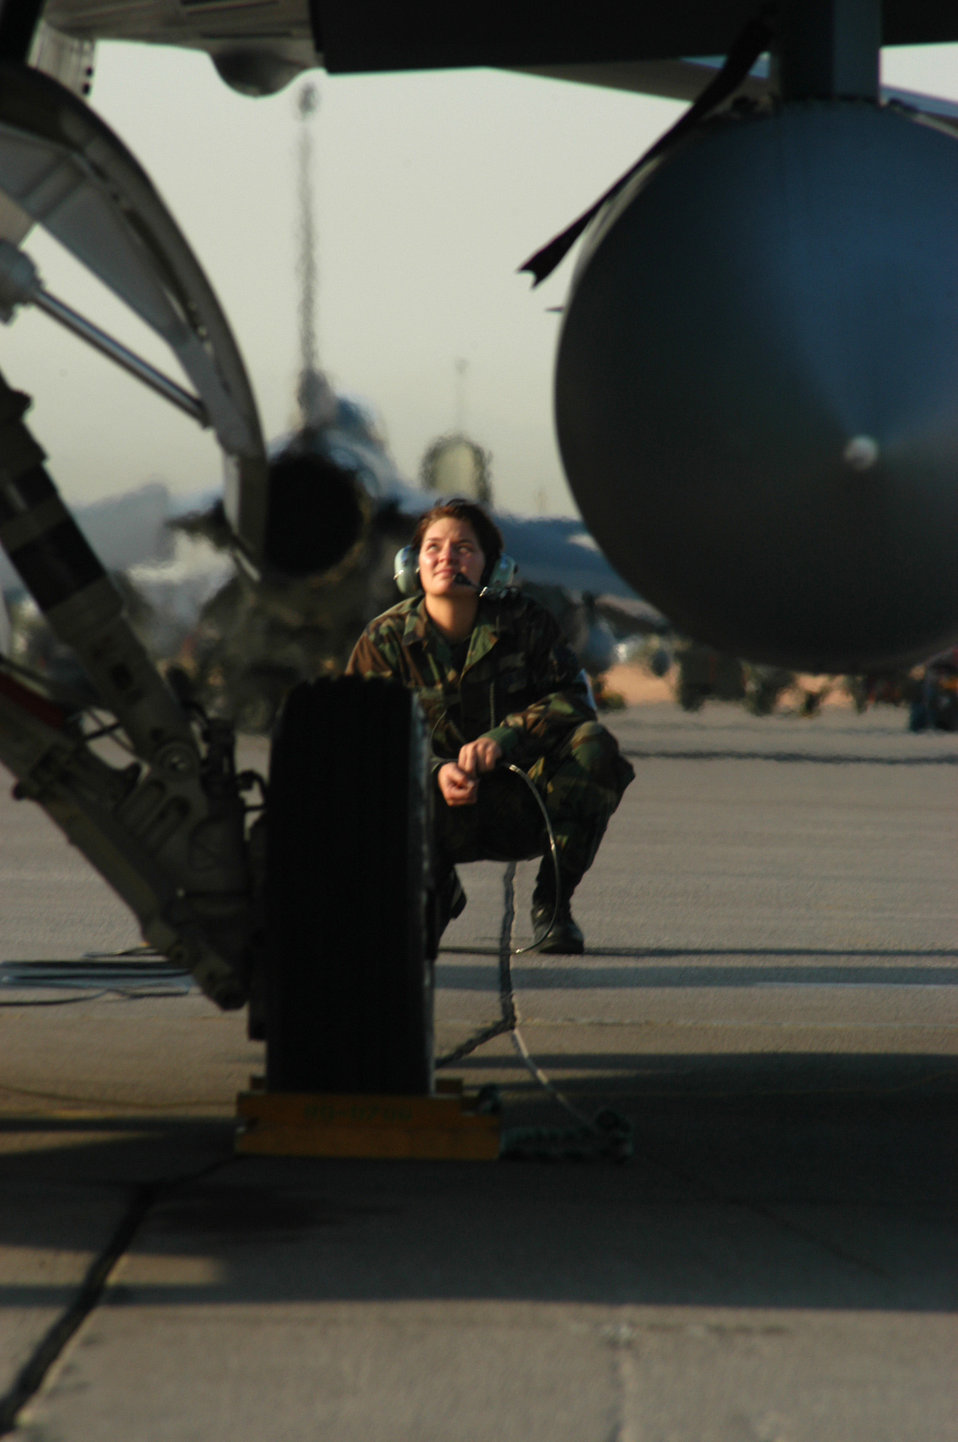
Ready to launch

NELLIS AIR FORCE BASE, Nev. --Senior Airman Sarah Spy waits to launch an F-16C for a sortie during the Red Flag exercise here recently. Airman Spy is assigned to the Ohio Air National Guard's 180th Fighter Wing.